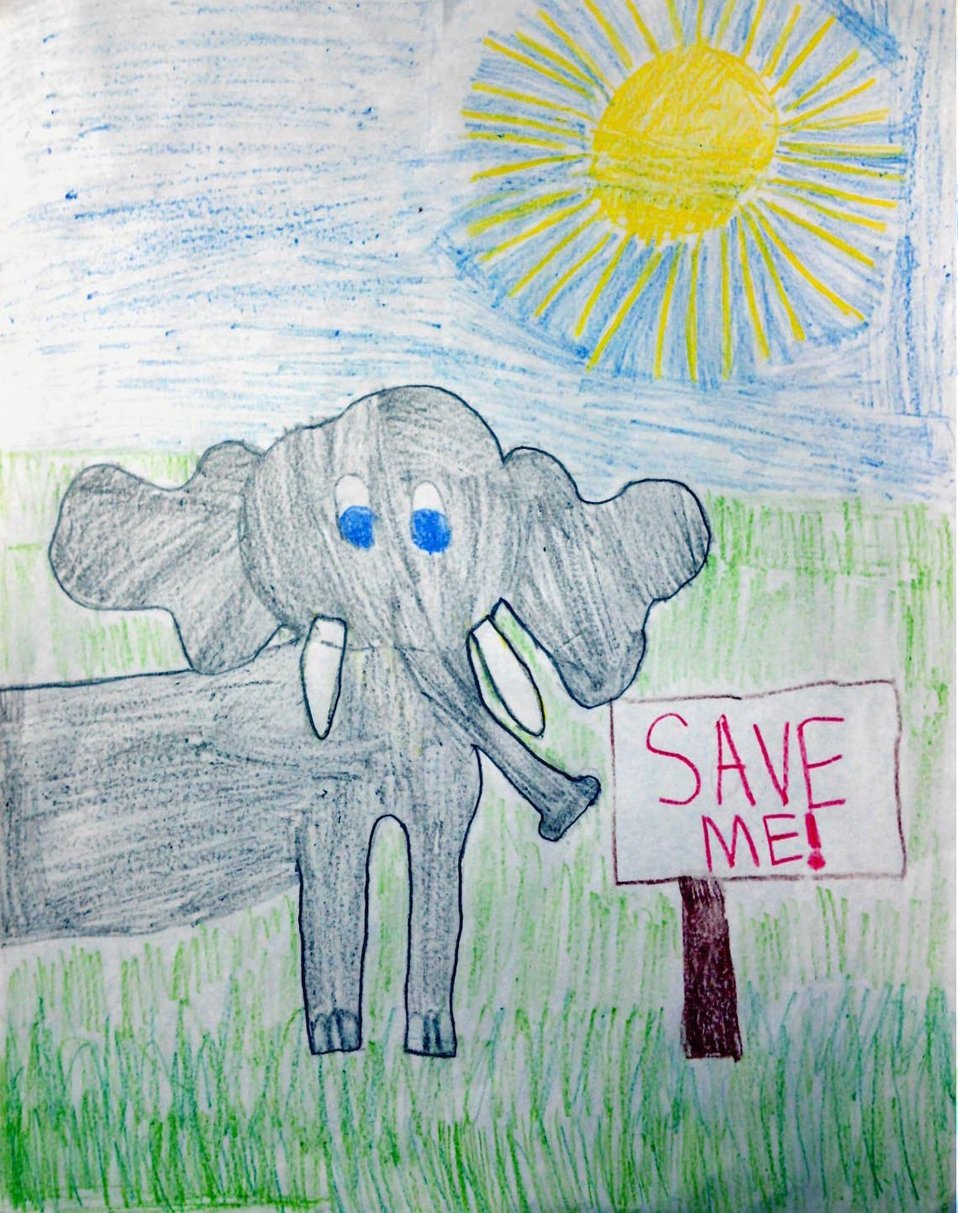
Drawing by Charlotte